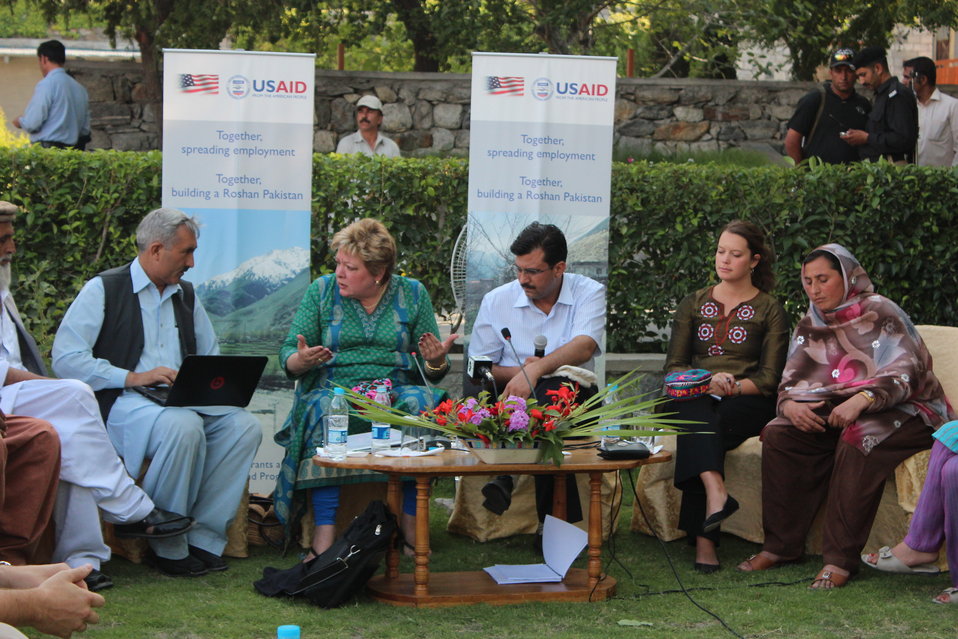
USAID Deputy Country Director Karen Freeman met with 6-8 beneficiaries from Gupis Rural Support Program

On Sunday, USAID Deputy Country Director Karen Freeman met with 6-8 beneficiaries from Gupis Rural Support Program to learn about their project funded by a USAID grant. The meeting took place at Serena Hotel in Gilgit.